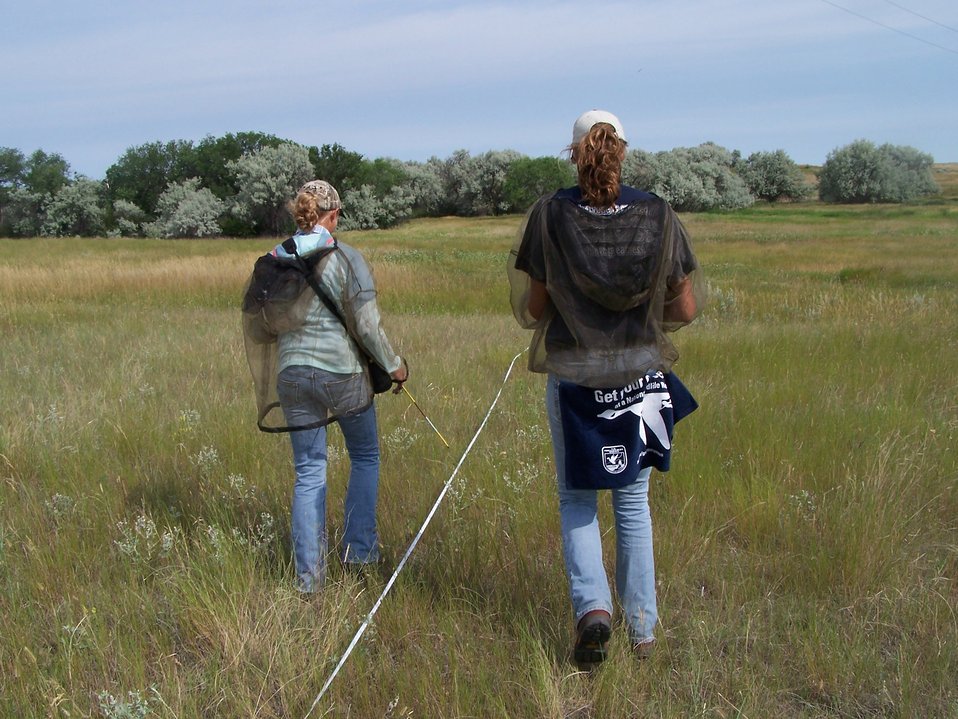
Get Your Goose On! - In the Field

Bowdoin NWR Summer Technicians doing vegetation transects with the GYGO towel.